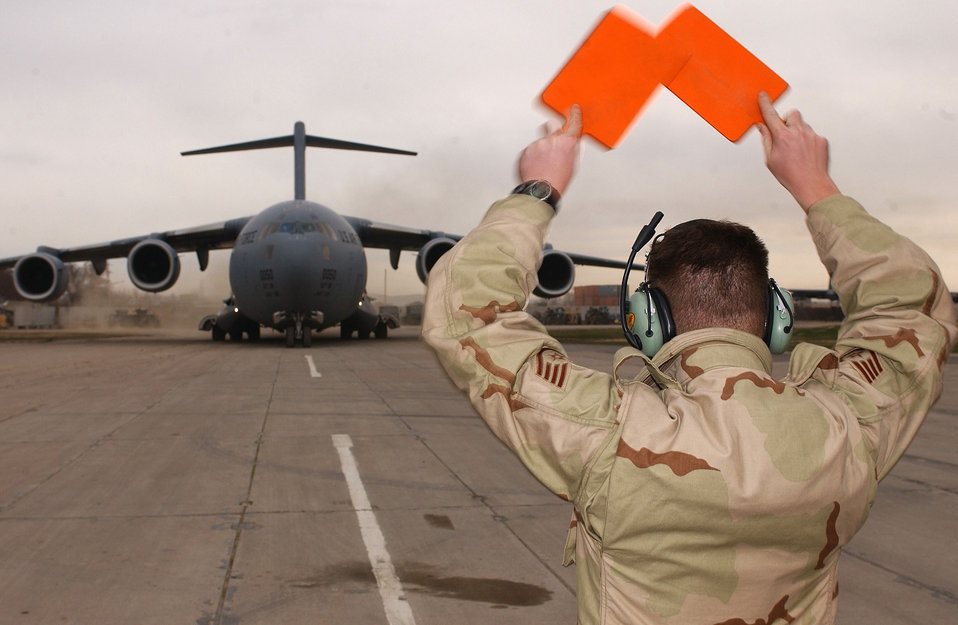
Camp Stronghold Freedom

OPERATION ENDURING FREEDOM -- A crew chief guides in a C-17A Globemaster III carrying Secretary of Defense Donald H. Rumsfeld, at Camp Stronghold Freedom in Uzbekistan. He was there to visit troops deployed in support of Operation Enduring Freedom on Dec. 16.